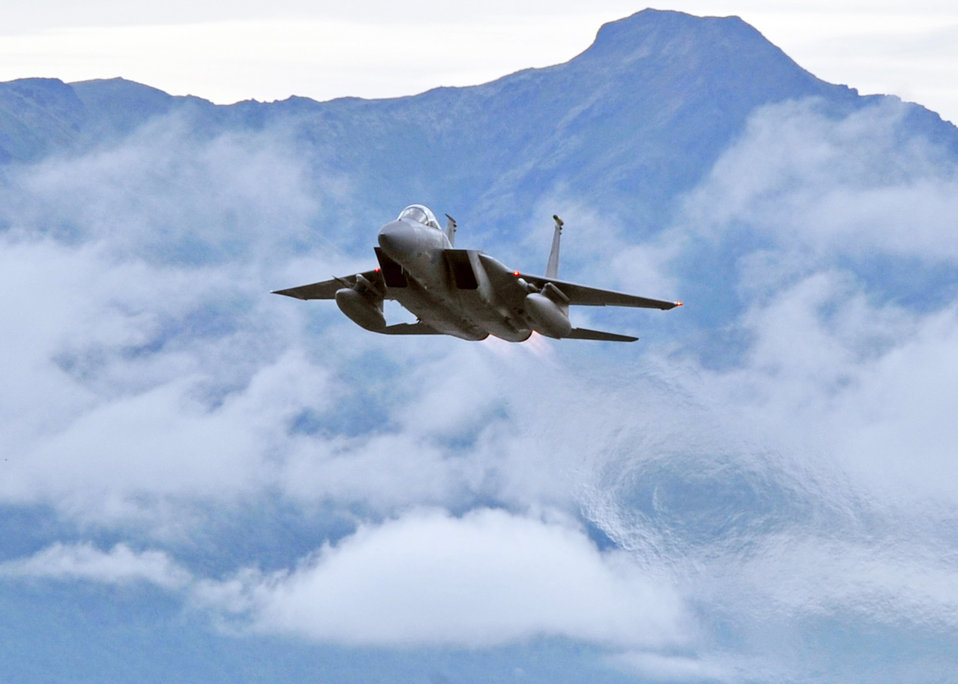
Swift and lethal

An F-15 Eagle takes off from Elmendorf Air Force Base, Alaska, July 28. The F-15 is assigned to the 19th Fighter Squadron. The unit is a part of the 3rd Wing at Elmendorf AFB and is one of three fighter squadrons there.